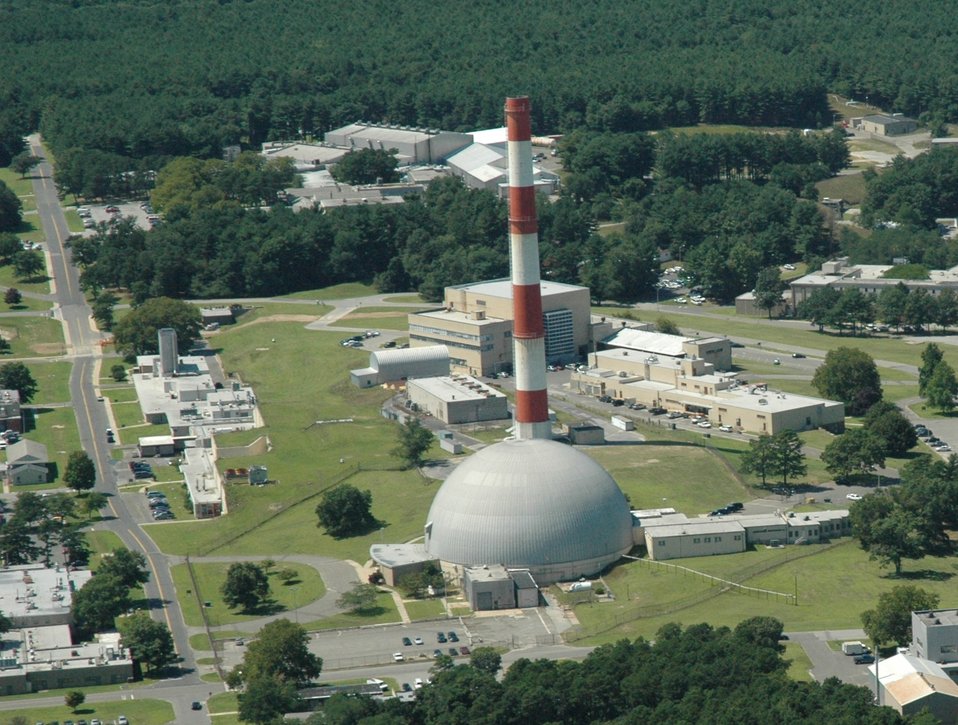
Brookhaven HFBR and BGRR

High Flux Beam Reactor (HFBR) with Brookhaven Graphite Research Reactor (BGRR) in the Background